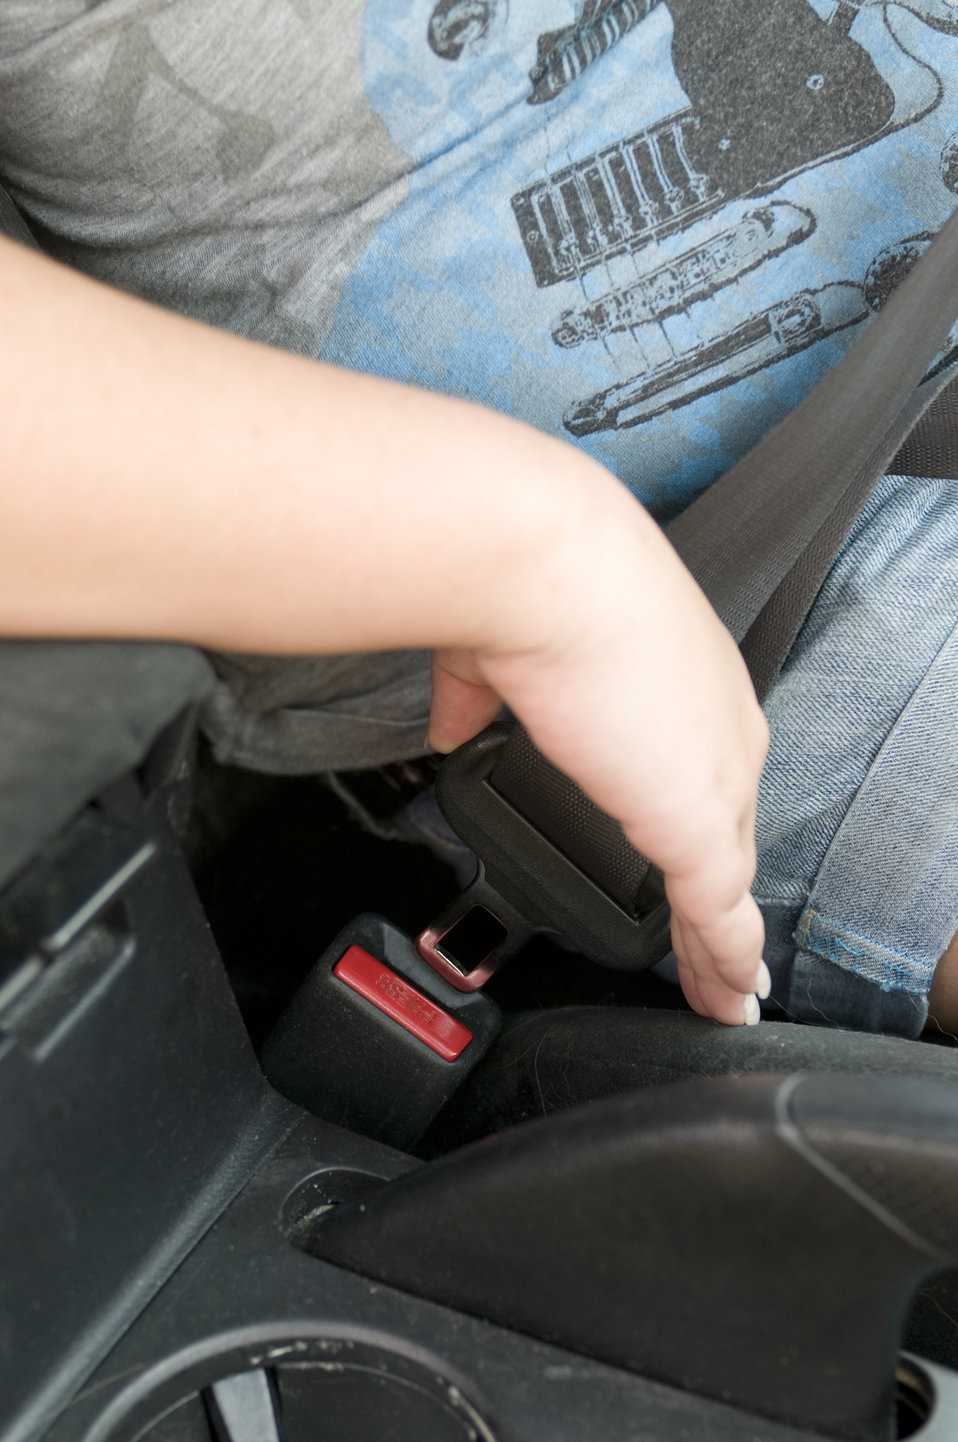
Here we see the right hand of a teenage motor vehicle operator, seated in the driver's seat, and securing her seat belt latch before embarking on a drive.